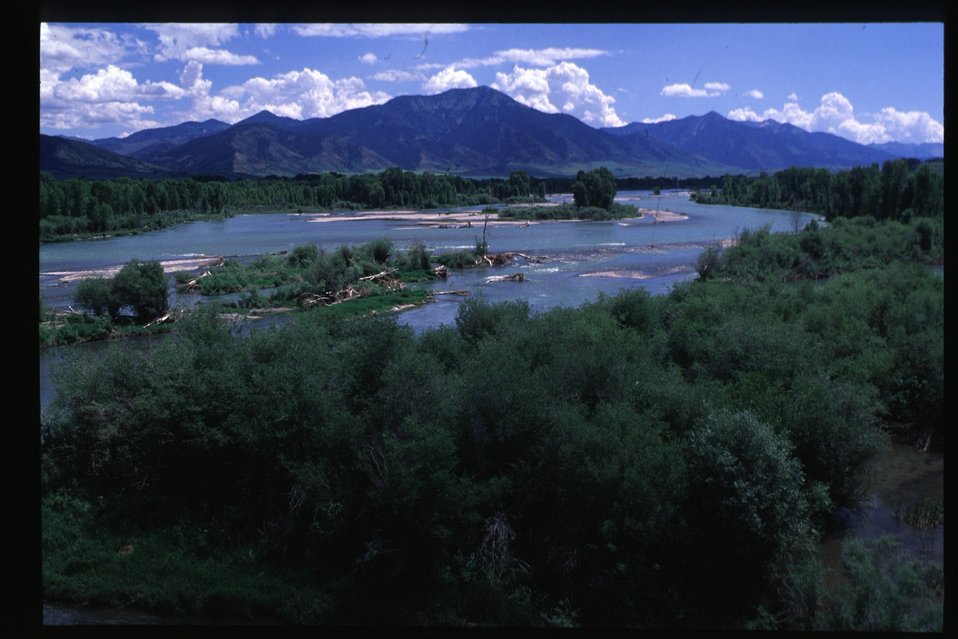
Scenic vista South Snake River Snake River Canyon USRD Upper Snake River District